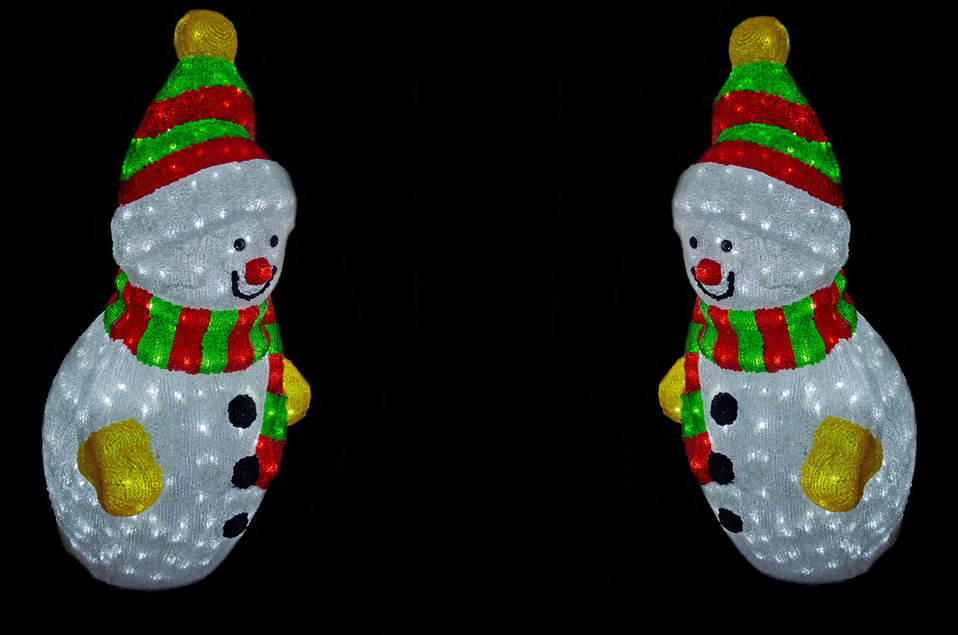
Christmas snowman.